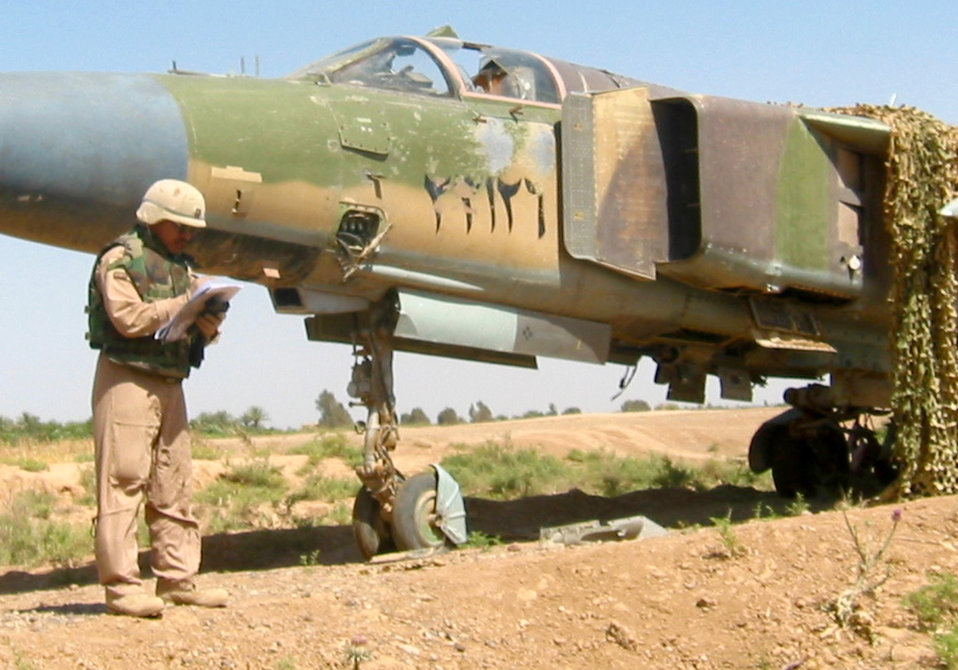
AMLOs help soldiers, Marines

SOUTHWEST ASIA -- Capt. R.C. DeJesus records information about a MiG 23 Flogger found in a field outside Balad Air Base, Iraq. Captain DeJesus was helping an Army-led effort to move several MiGs back to the base, so that they no longer presented hazards to the local people. The MiGs were placed throughout the countryside by the Iraqi military before Operation Iraqi Freedom. Captain DeJesus is an Air Mobility Liaison Officer with the Army's 5th Corps in Heidelberg, Germany.